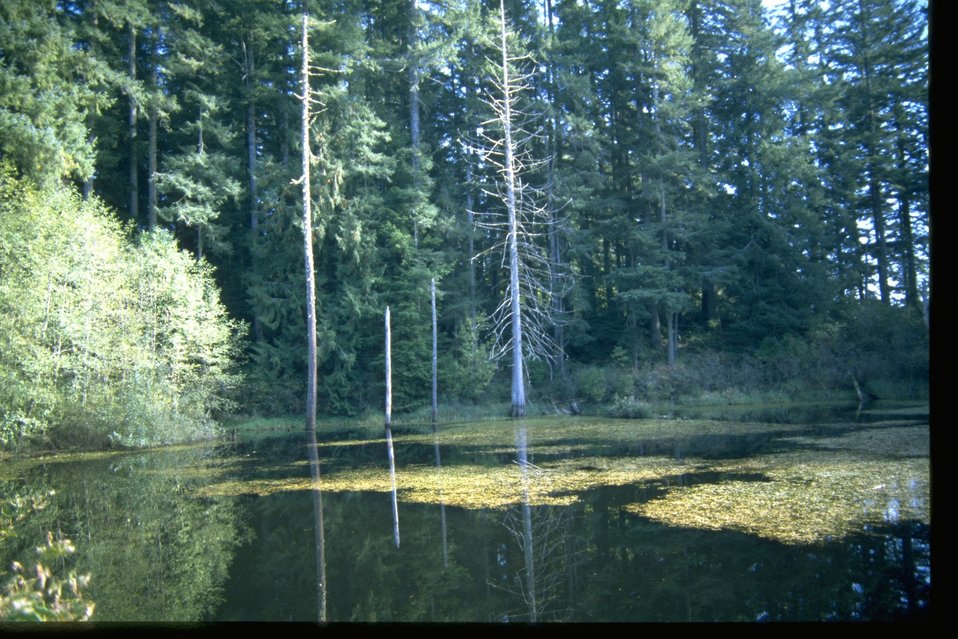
Blue Ridge Waterhole.